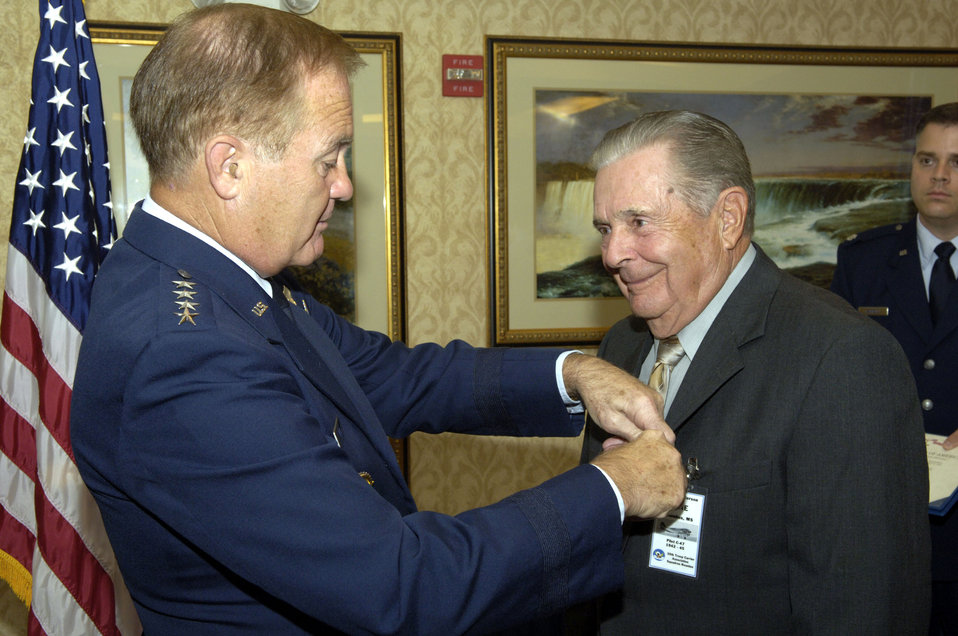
World War II vets receive Bronze Stars after 62 years

Gen. Ronald E. Keys presents Eugene Peterson a Bronze Star at a ceremony in Washington, D.C., Sept. 9. Five Bronze Stars were presented to World War II veterans. The paperwork for the medals had been misfiled and rediscovered more than 60 years later. The men were unaware they were supposed to receive the medals. General Keys is commander of Air Combat Command.